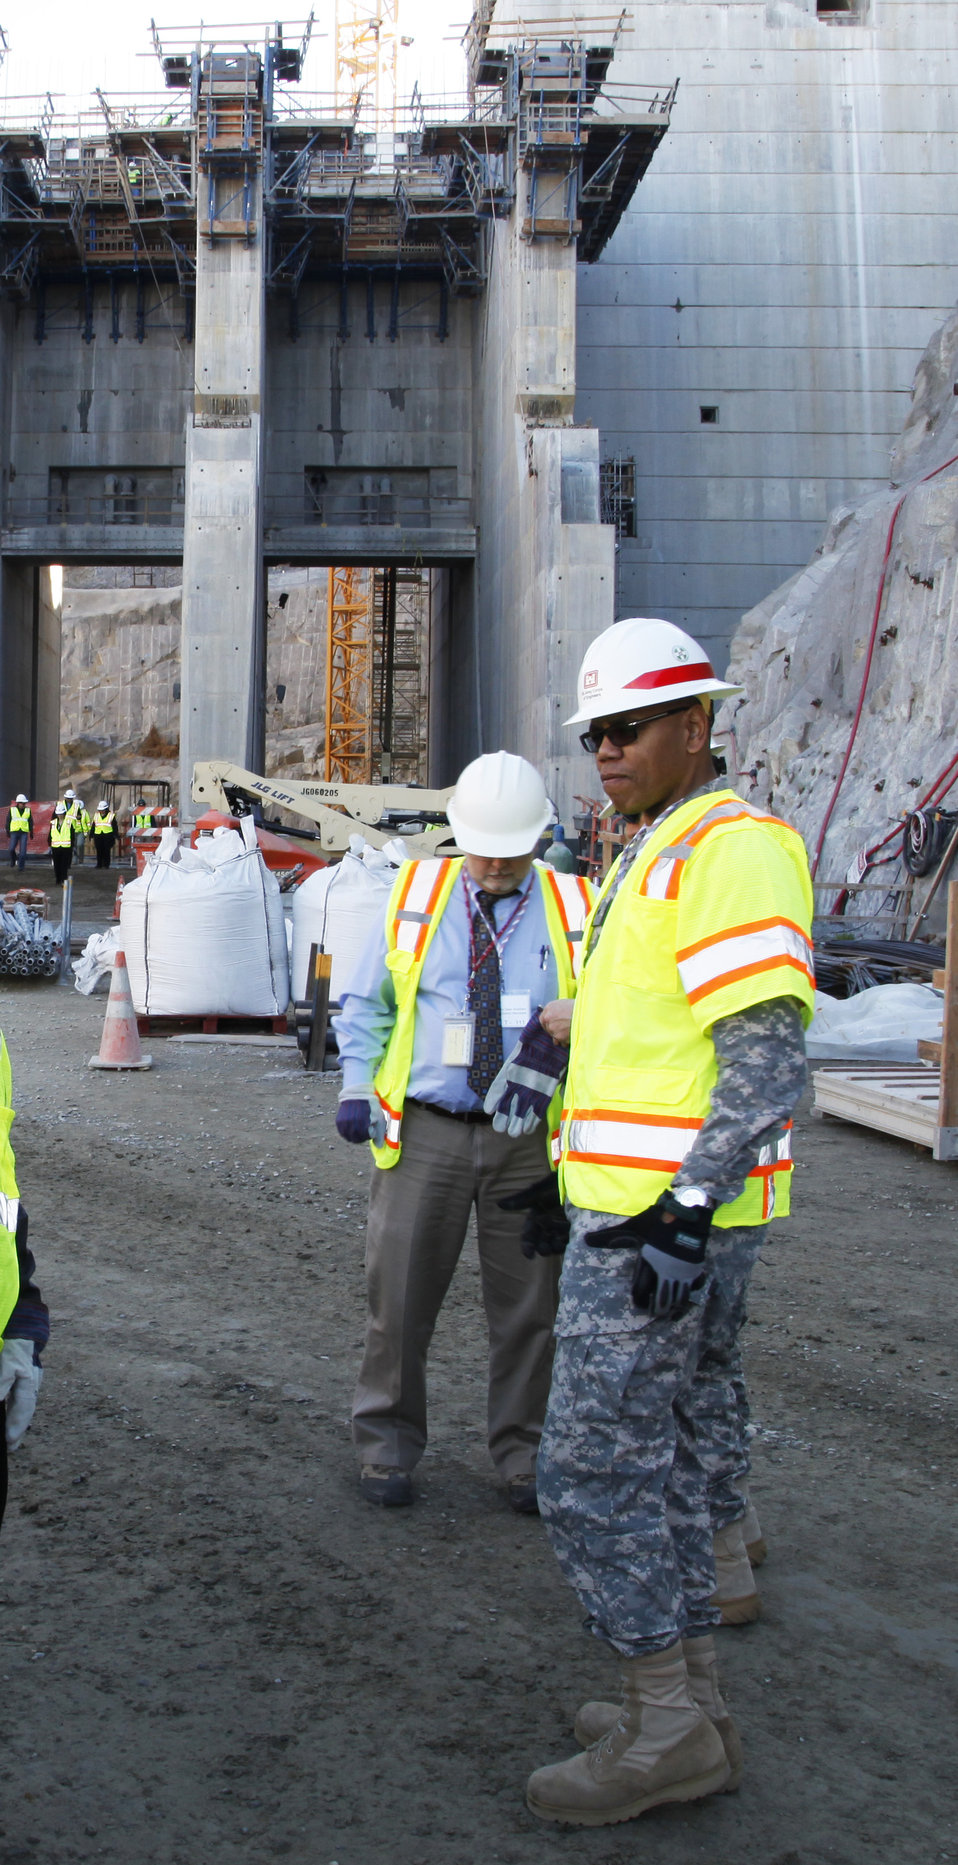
Gate support structure work continues at Folsom spillway project

Commanding general of the U.S. Army Corps of Engineers’ South Pacific Division, Brig. Gen. Dave Turner, visits the construction site for the Folsom Dam auxiliary spillway in Folsom, Calif., Jan. 22, 2014. The concrete support structures located behind Brig. Gen. Turner continue to rise and will soon house six large tainter gates that control water flow.